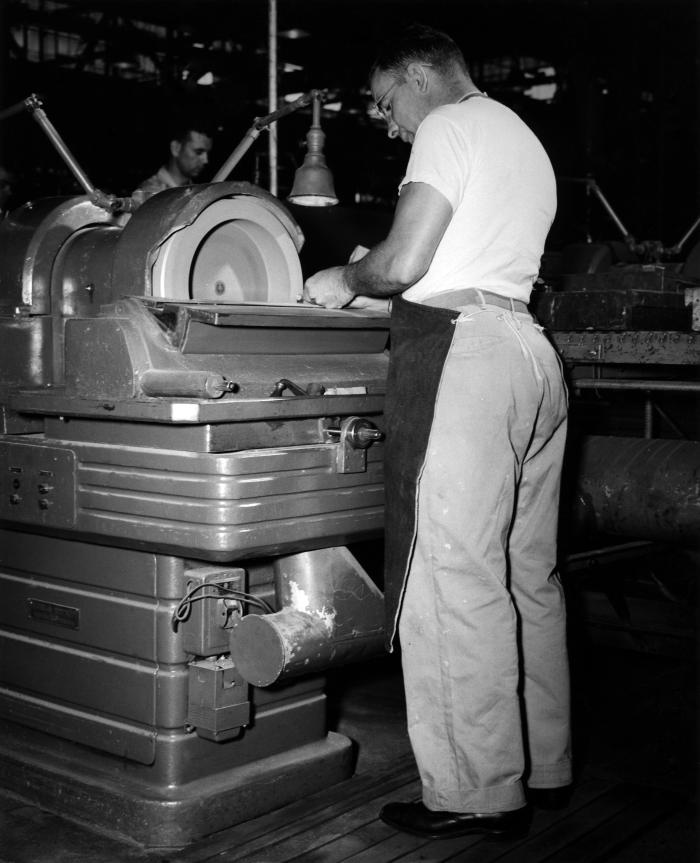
From approximately 1940, this historical photograph, which had been photo-retouched prior to printing, was provided by the Center for Disease Control's (CDC), National Institute for Occupational Safety and Health (NIOSH). It depicted a worker at a small hooded grinding machine that had been equipped with an exhaust ventilator. In the 1940s and 1950s, the Industrial Hygiene Division (IHD) investigated hazards associated with activities such as metal grinding. It was in scenarios such as this where there existed the potential for worker health problems associated with industrial metal grinding, including respiratory and dermatologic hazards from inhalation and contact with fungi- and bacteria-contaminated synthetic metal-working fluids, oil mists, and grinding dust in the machining areas.